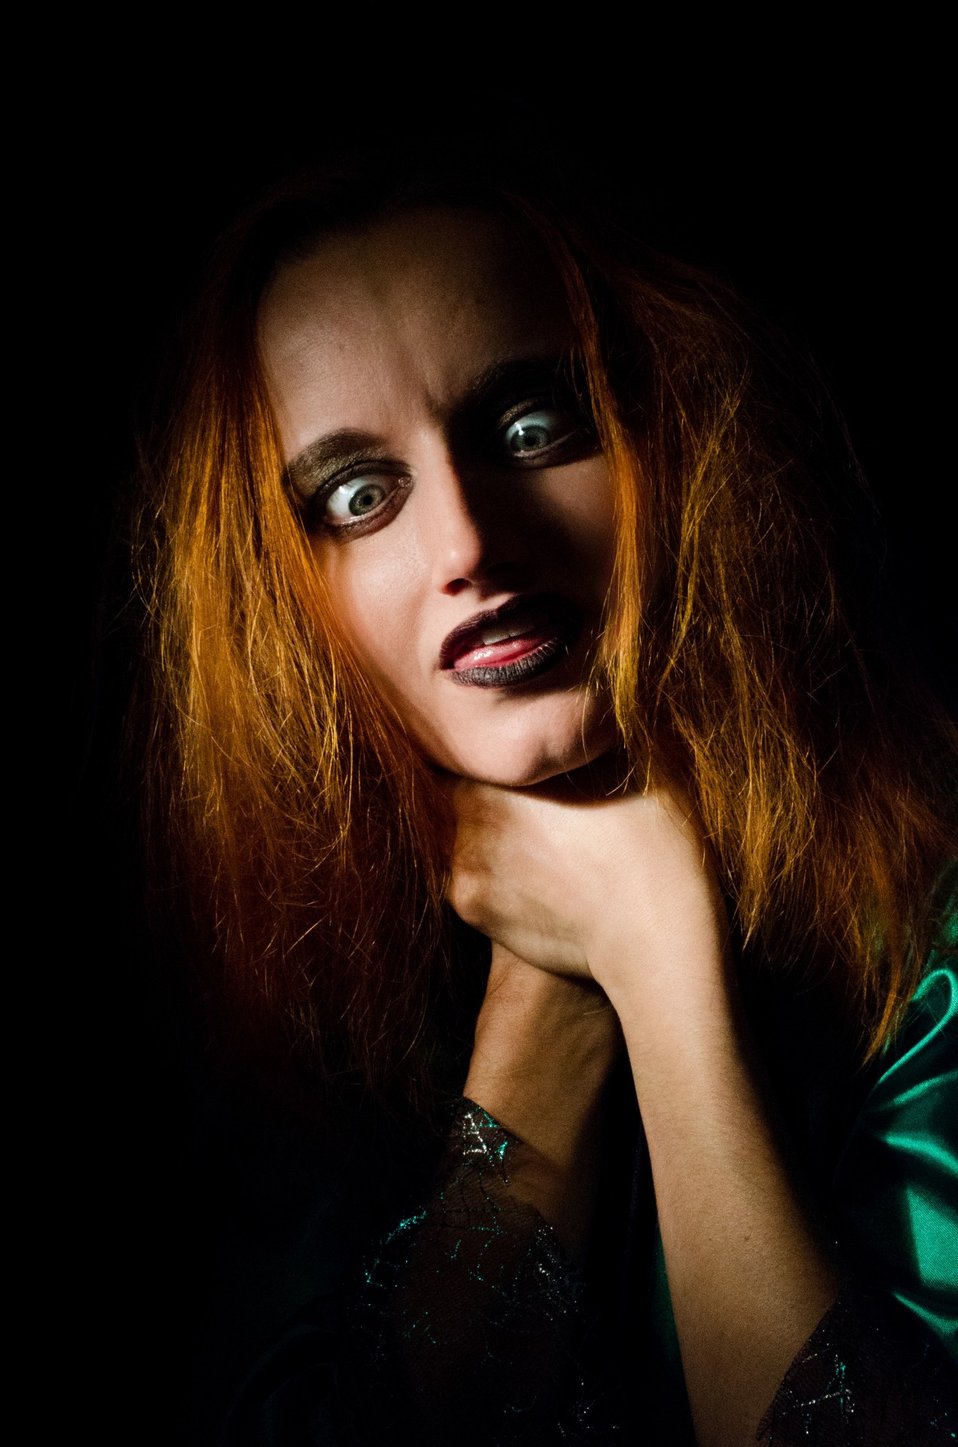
Halloween witch.